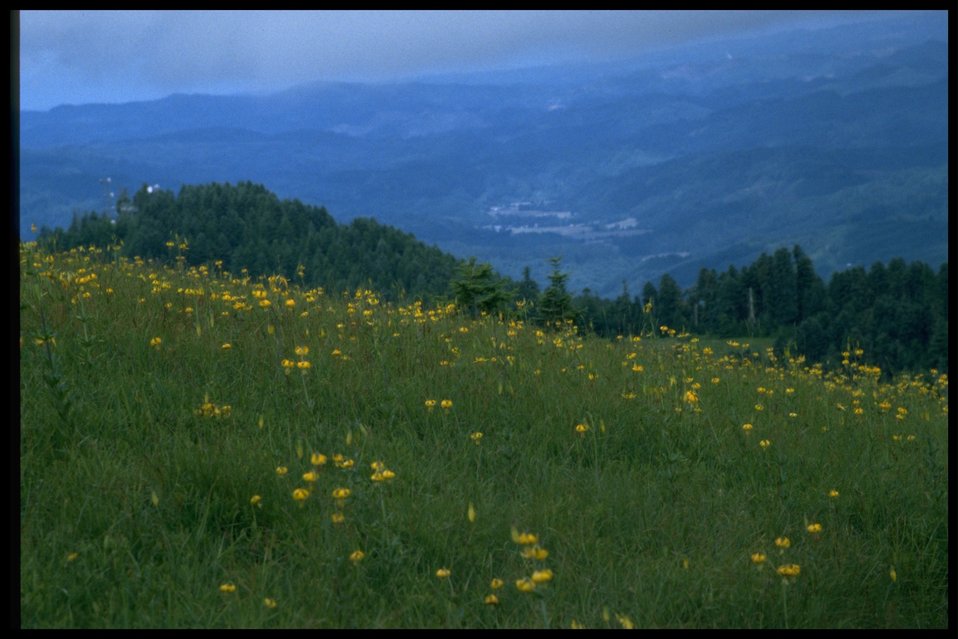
Meadow, wildflowers, scenic view from Mary's Peak.